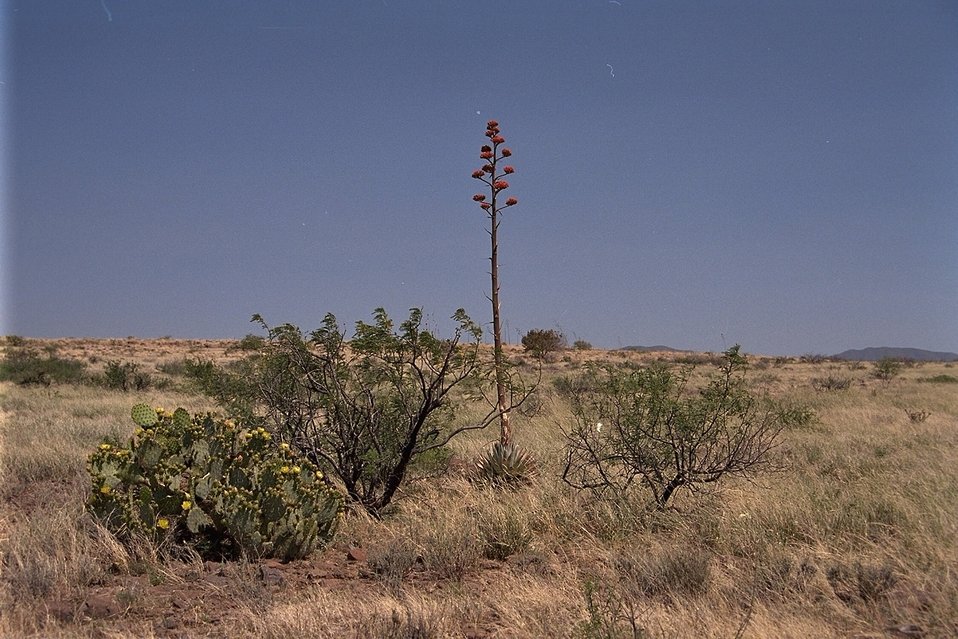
Alongside prickly pear cacti and small trees, the century plants stalk is in full bloom.